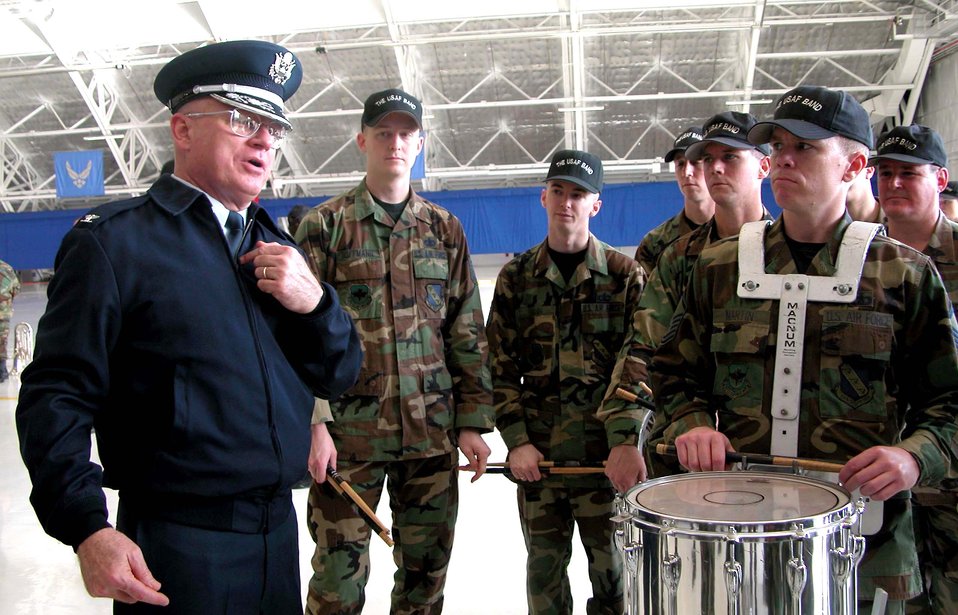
Air Force Band ready for inauguration

ANDREWS AIR FORCE BASE, Md. -- Col. Dennis Layendecker talks with members of his drum corps after practice here Jan. 13. Colonel Layendecker will lead the band down Pennsylvania Avenue during the president's inauguration Jan. 20. He is the commander and music director for the U.S. Air Force Band based at Bolling Air Force Base, D.C.